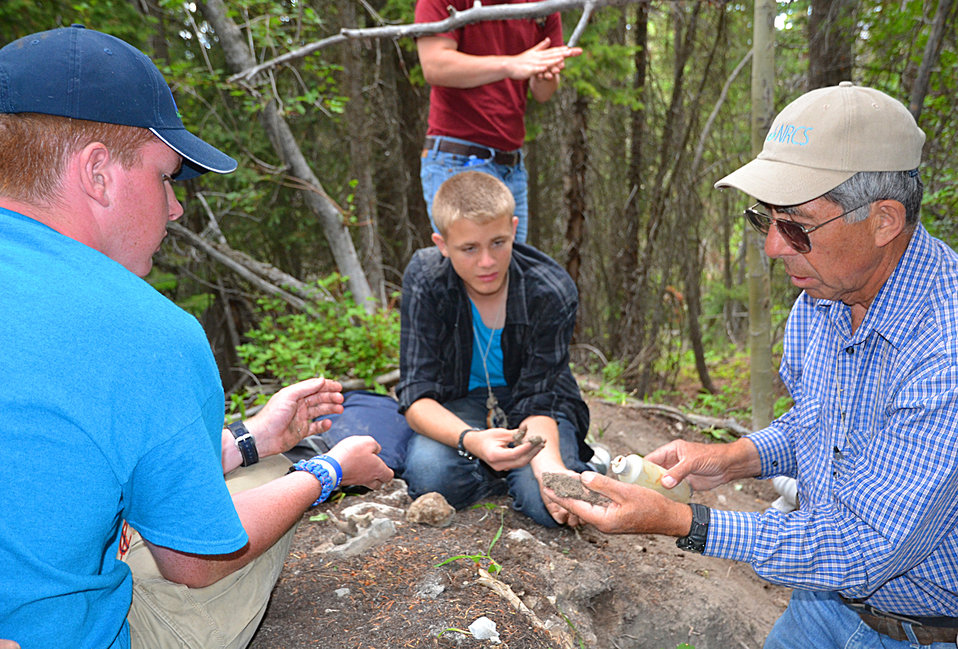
NHSC Soil Science

Ivan Torres (left) and Trevor Demille learn soil texture by feel and appearance from U.S. Department of Agriculture (USDA) Natural Resource Conservation Service (NRCS) soil scientist Ray Grow.